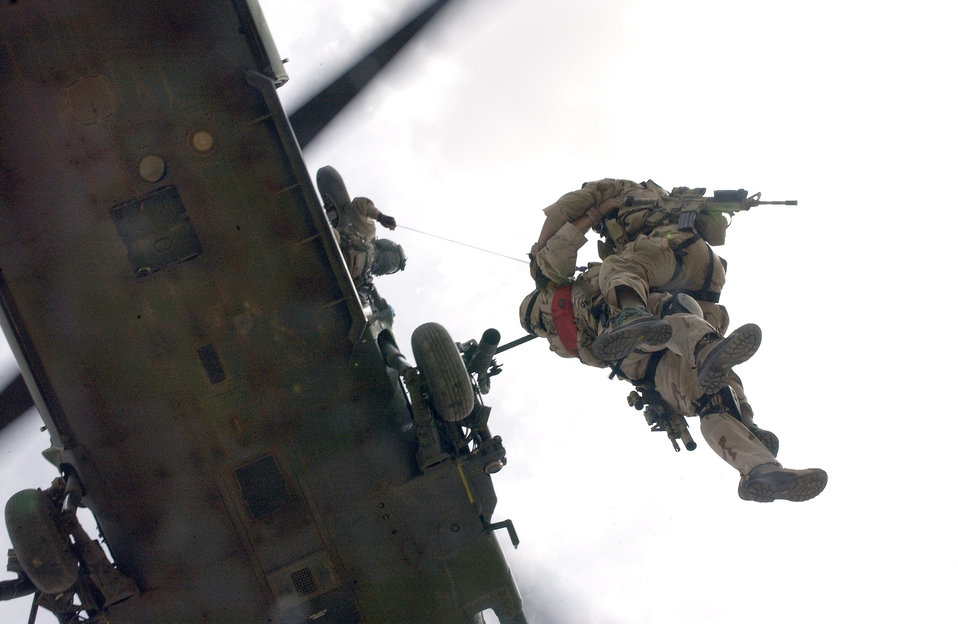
Pavehawk lift

OVER BALAD AIR BASE, Iraq -- Two pararescuemen are hoisted up into a HH-60G Pavehawk after securing a landing zone here March 30. The pararescuemen are assigned to the 64th Expeditionary Rescue Squadron.